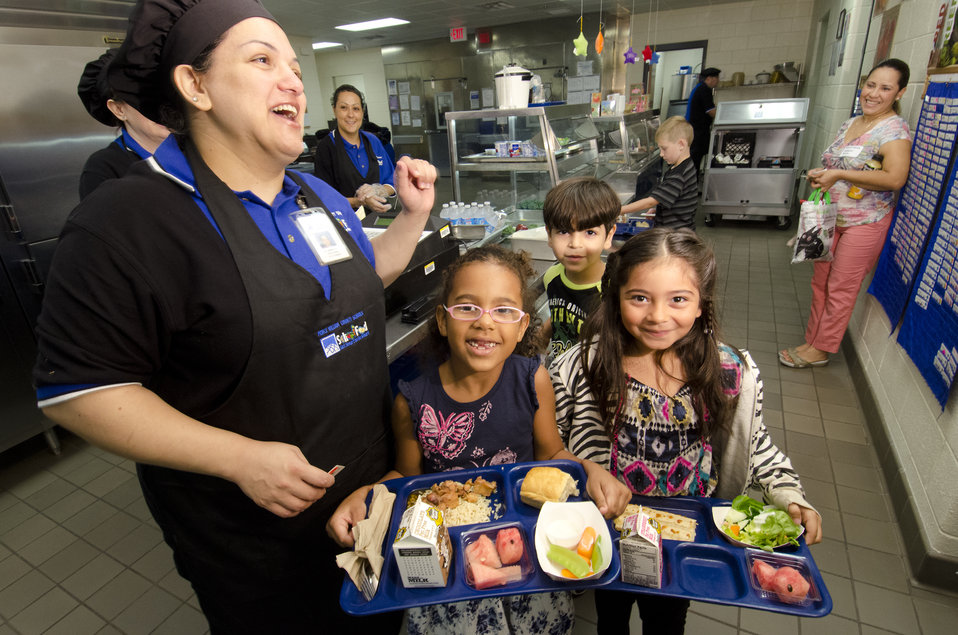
School lunch staff and students enjoy the new school lunch menu created to meet the new standards at the Yorkshire Elementary School in Manassas, VA on Friday, Sept. 7, 2012.